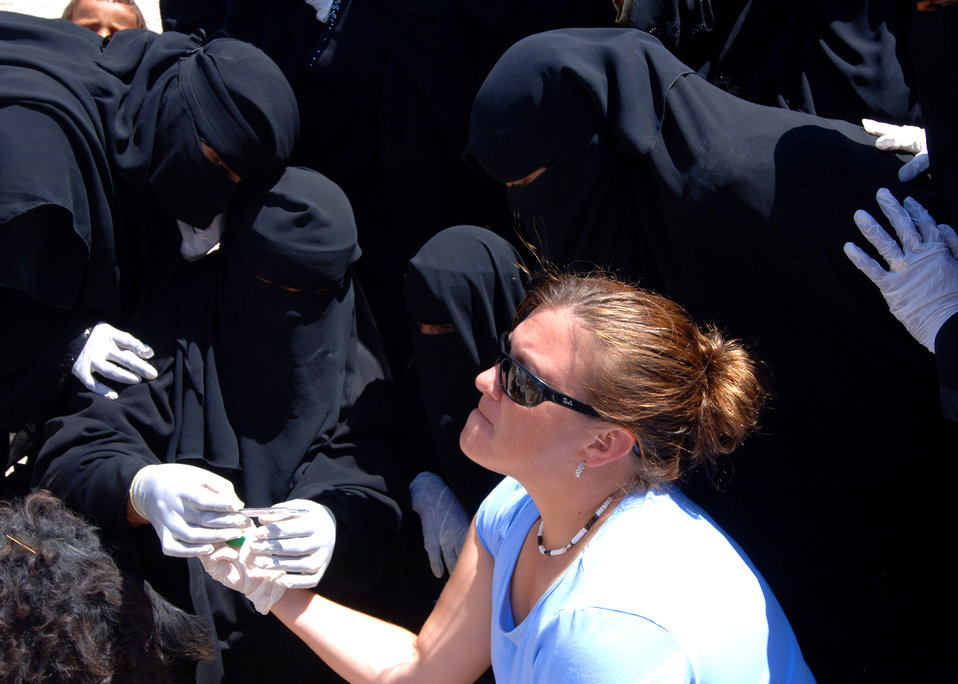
Veterinary project has big impact on small island

Army Staff Sgt. Jennifer A. Brooks, a civil affairs specialist, explains the use of a thermometer to a group of animal health workers as part of a Combined Joint Task Force-Horn of Africa veterinary civic action project on the island of Socotra, Yemen. The objective of the project was to teach women on the island basic animal husbandry techniques. Those learned skills will be used to improve the country's overall livestock health and productivity.